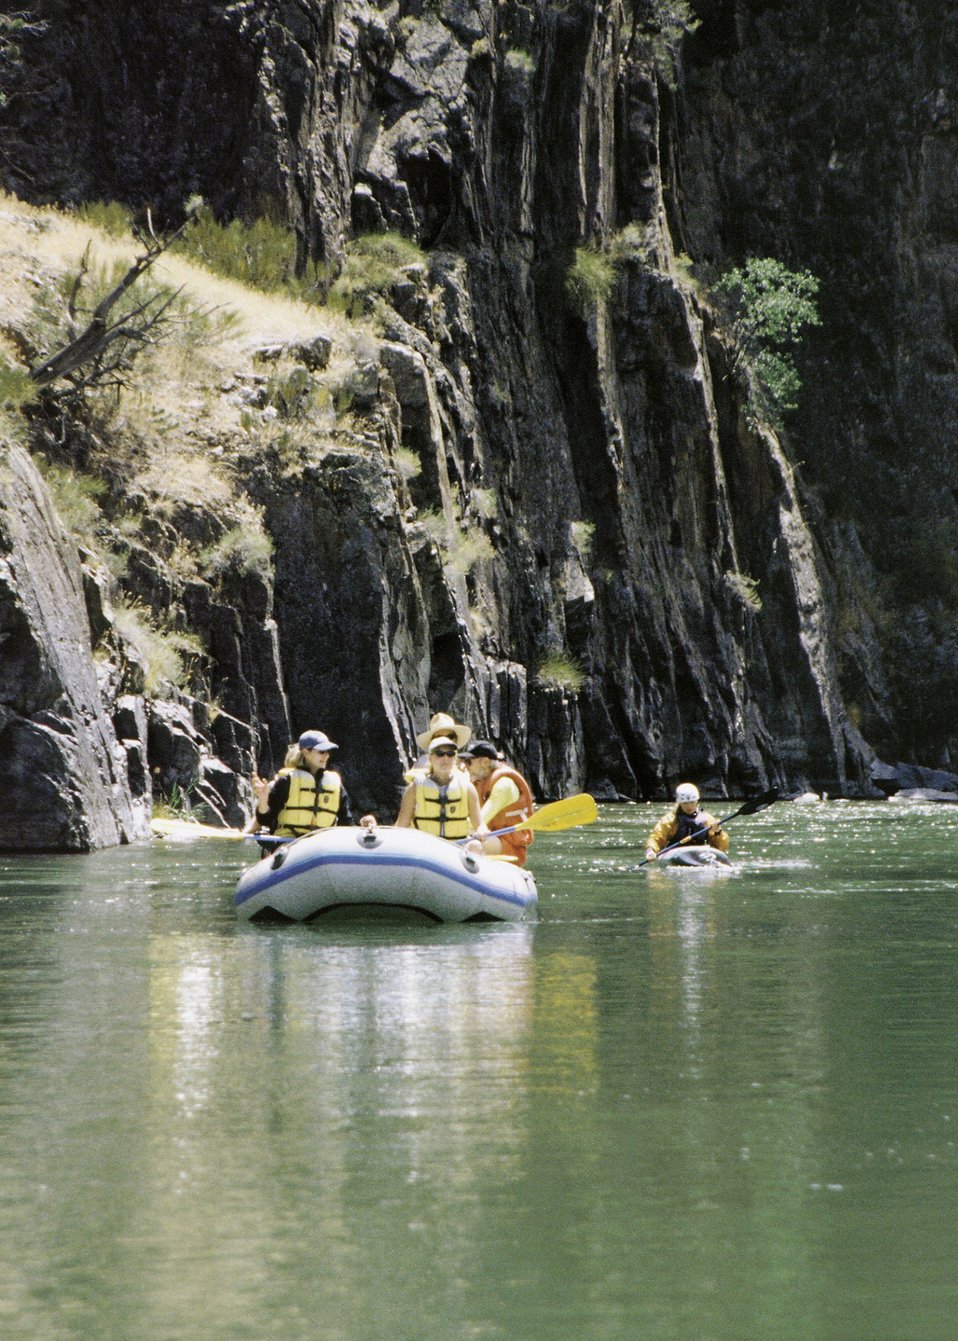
Rafting